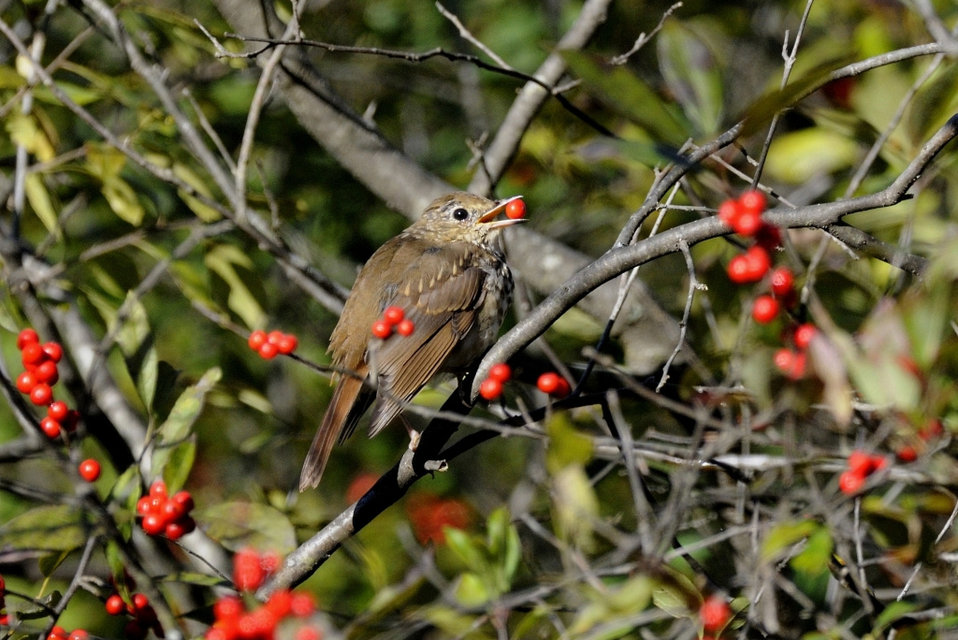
Photo of the Week - Hermit Thrush (MA)

Photo of the week - 10/14/13

Hermit Thrush photographed at the Quabbin Reservoir.